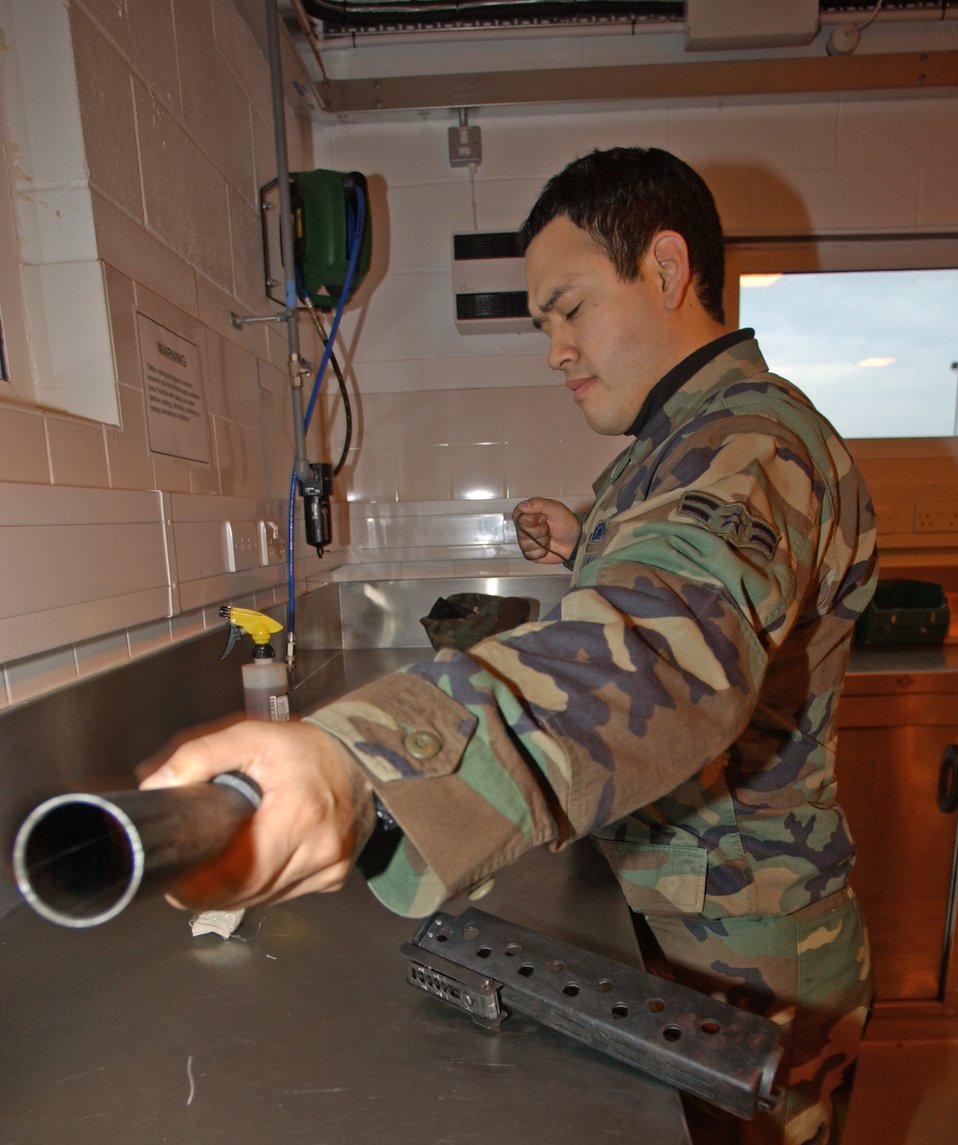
Launcher wash

ROYAL AIR FORCE LAKENHEATH, England -- Airman 1st Class Mark Gonzalez cleans an M203 grenade launcher here. The launcher can engage targets 400 meters away and can use M406 and M433 grenades. Airman Gonzalez is assigned with the 48th Security Forces Squadron.